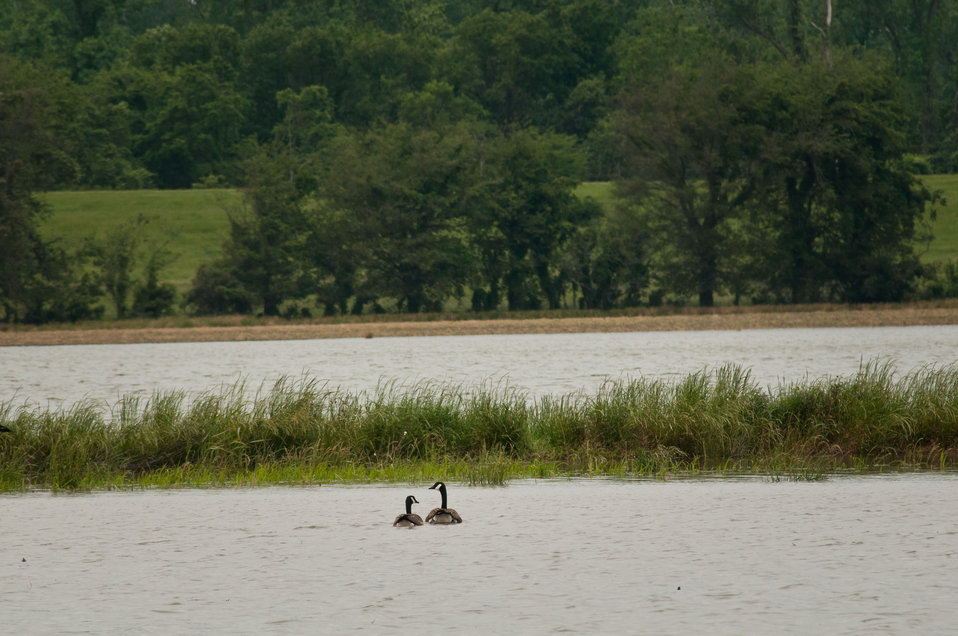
Floods waters from Mississippi River inundated casinos and farms that surround Tunica, MS, on Sunday, May 15. 2011.